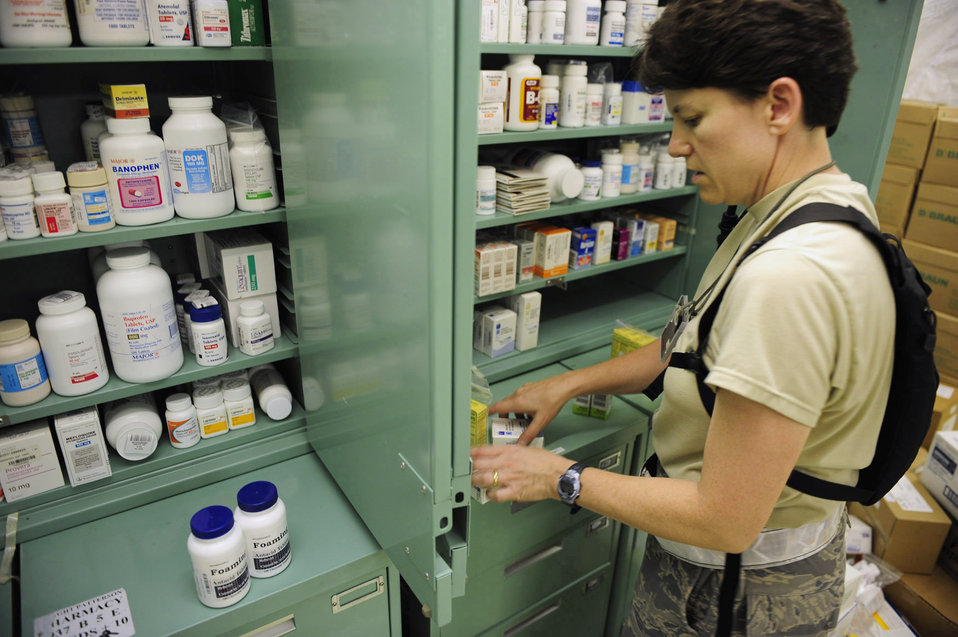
Vibrant Response

Maj. Vina Howarth stores pharmaceutical supplies in the expeditionary medical support tent during exercise Vibrant Response July 14, 2010, at Camp Atterbury, Ind. Major Howarth is assigned to the 59th Pharmacy Squadron.